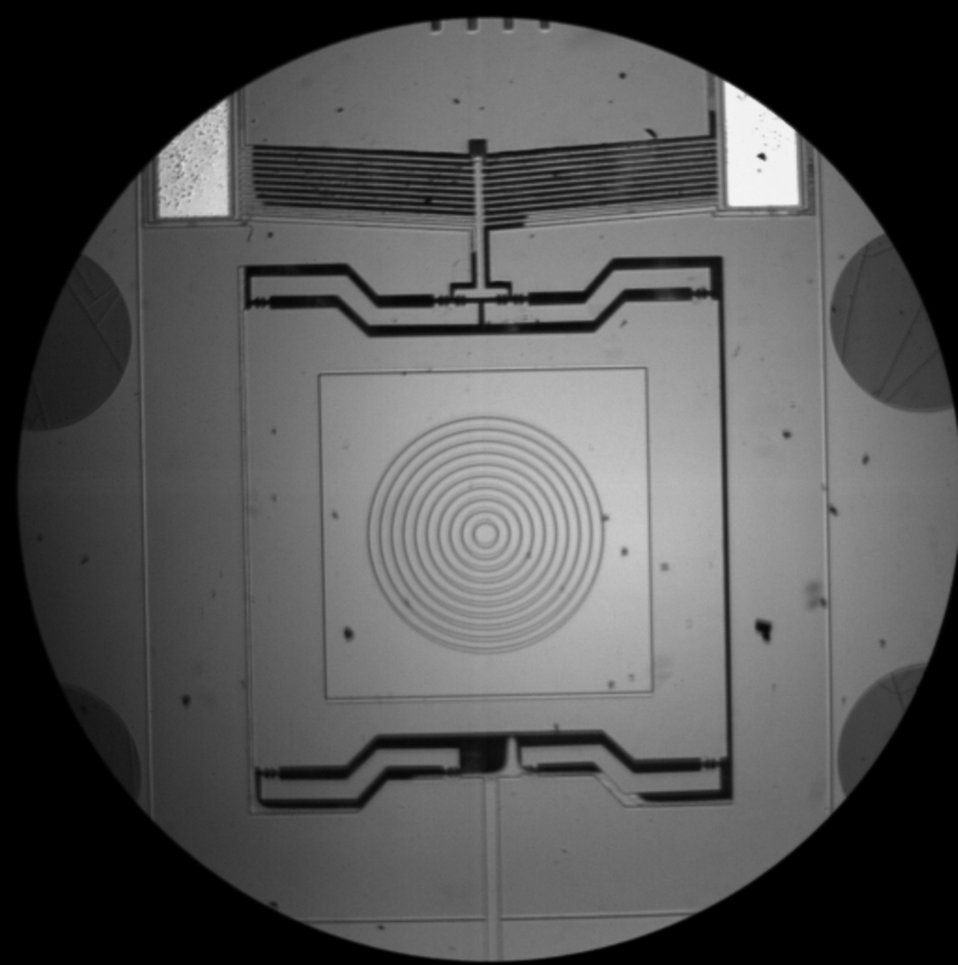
MEMS

The NIST MEMS-based rheometer (click to retrieve mpg file of the device in action.) The moving plate is controlled by resistance heating elements in the chevron-like structure at the top; expansion and contraction of the vanes causes the plate to move up and down. Central square where the sample would rest is approximately 500 micrometers across.